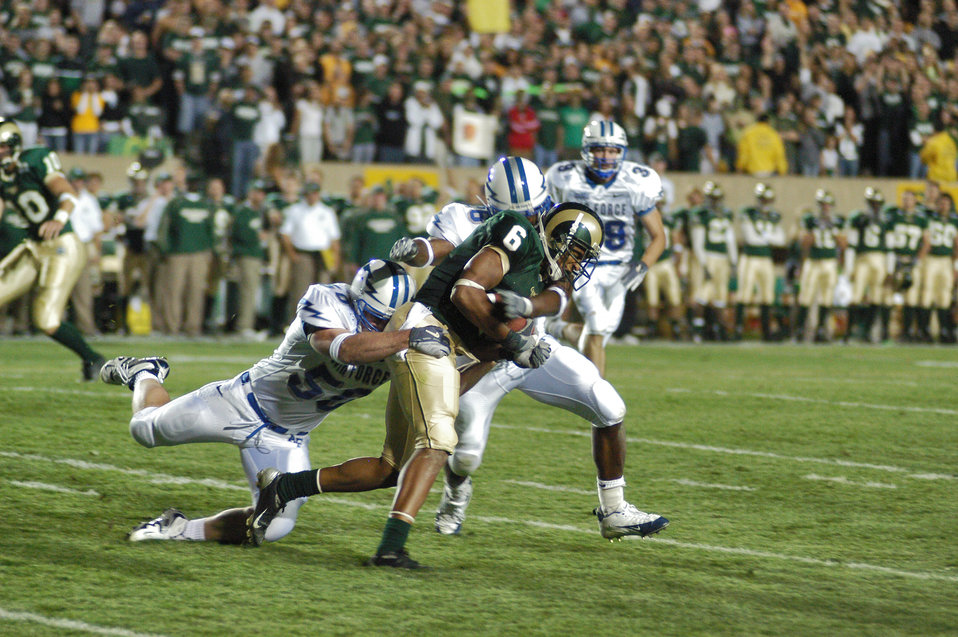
Colorado State rams Falcons, 41-23

FORT COLLINS, Colo. -- Air Force special teamers Aaron Shanor, 50, and Jared Baxley, 26, wrap up Colorado State University kick returner Robert Herbert Sept. 29 in Fort Collins.